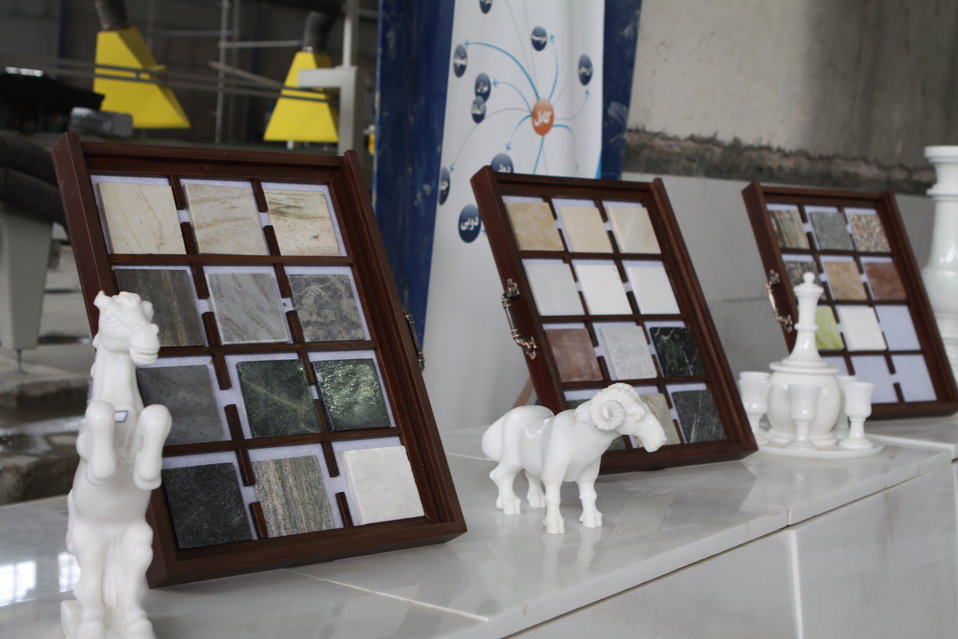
100525 Hirat Marble Conference 284